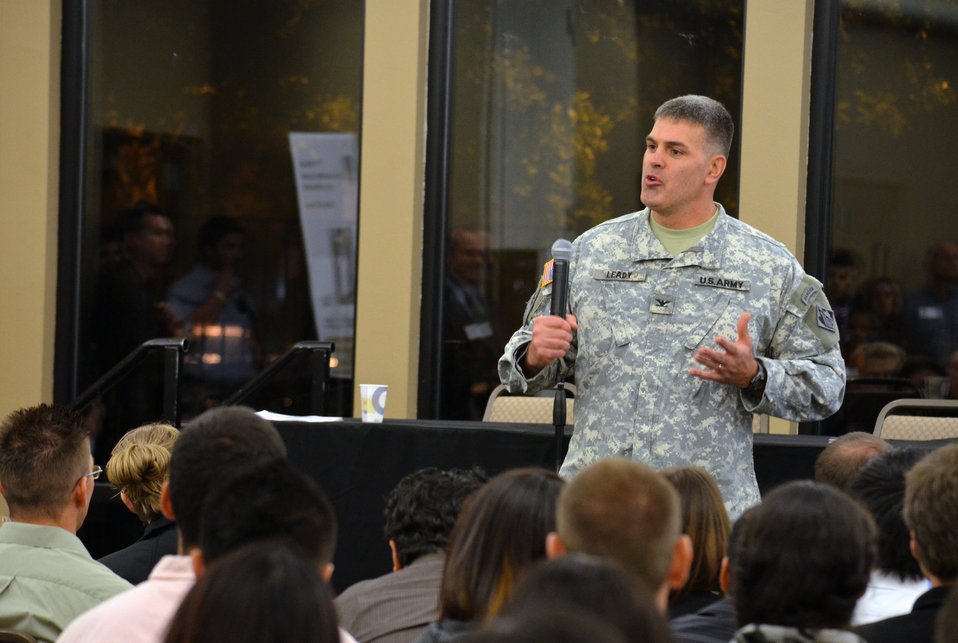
Corps engineers showcase federal jobs to students at Career Fair

Colonel Bill Leady, commander of the U.S. Army Corps of Engineers Sacramento District, speaks to students and faculty at the California State University-Sacramento’s career fair Nov. 3, 2011 in Sacramento, Calif. Leady was the keynote speaker for the event, aimed at students in engineering fields, and spoke about job opportunities with the Corps. “America needs engineers,” Leady said to the students during his speech. “America needs you.”